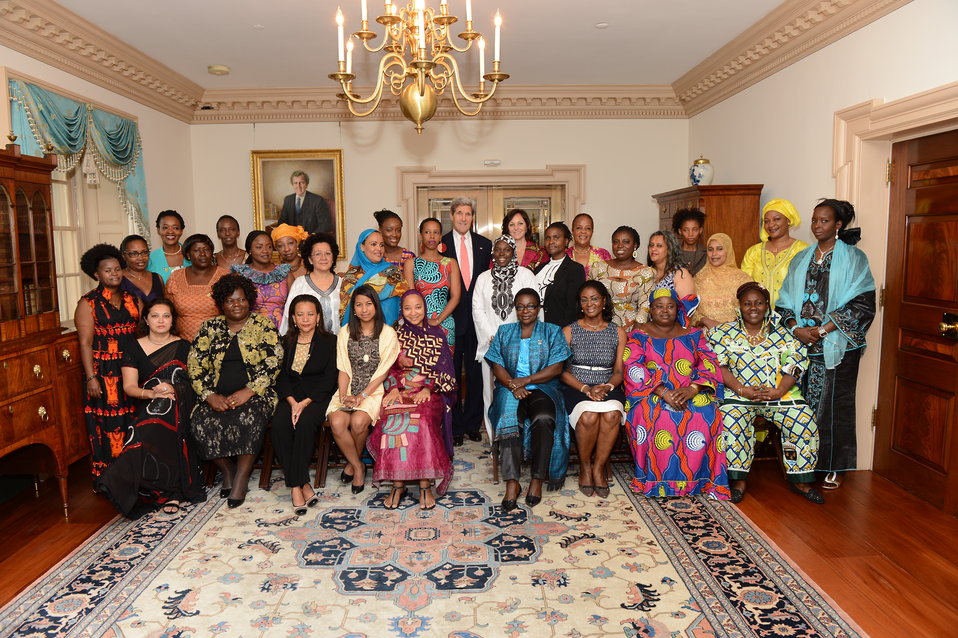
Secretary Kerry Meets With African Women’s Entrepreneurship Program Delegates

U.S. Secretary of State John Kerry meets with African Women’s Entrepreneurship Program (AWEP) Delegates at the U.S. Department of State in Washington, D.C., on August 6, 2013.